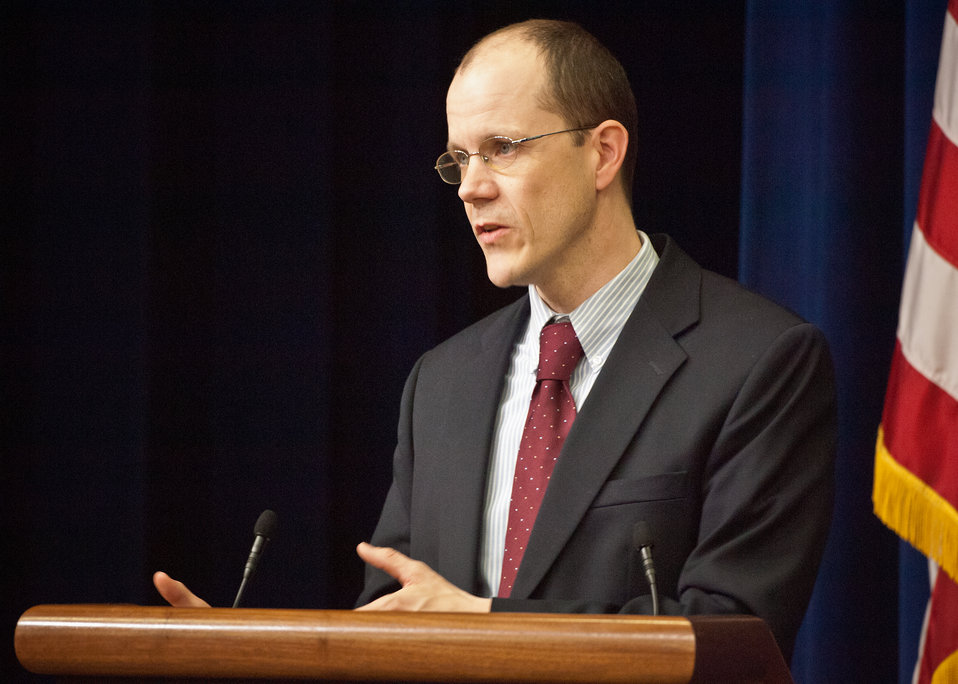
Doug O’Brien, Deputy Undersecretary, Rural Development explained the scope of the United States Department of Agriculture Rural Development and its benefits to rural business, housing and utilities at the 11th Annual Meeting of State Agriculture and Rural Leaders at the Eisenhower Executive Office Building in Washington, D.C., on Friday, January 6, 2012.